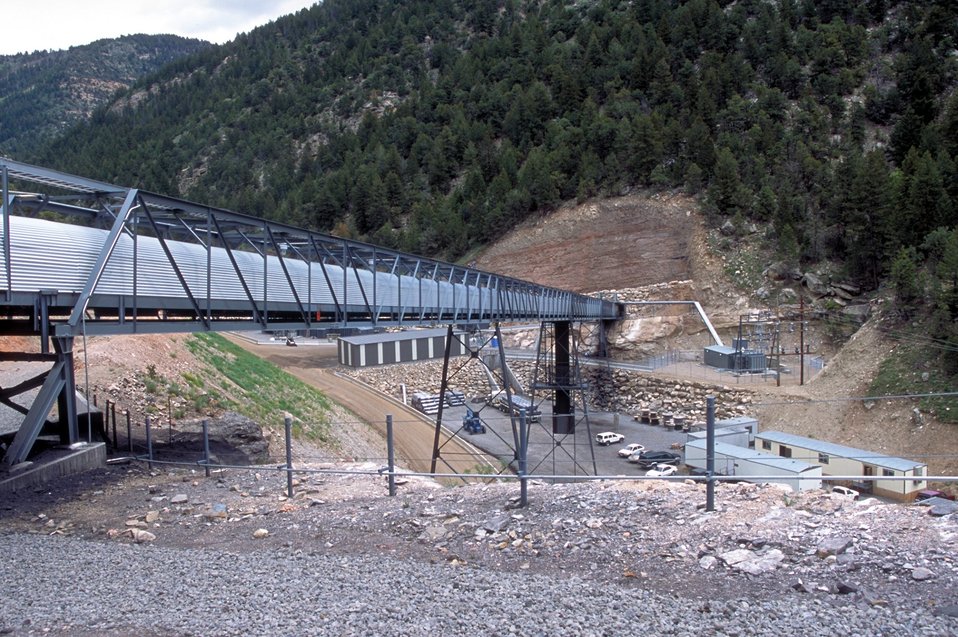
Coal production near Price, Utah.